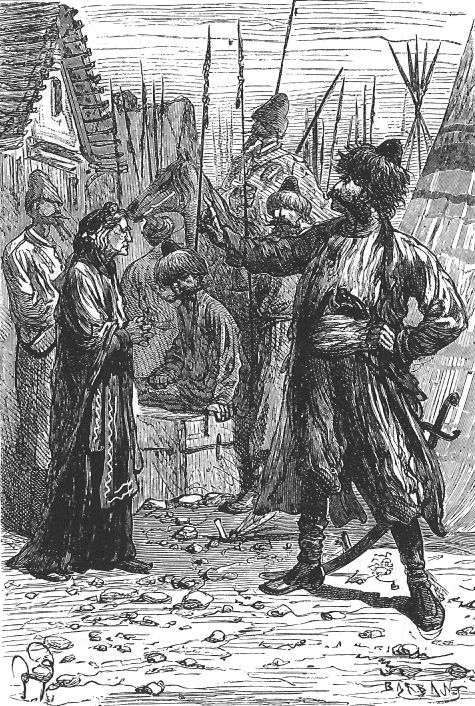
An illustration from the novel 'Michael Strogoff: The Courier of the Czar' by Jules Verne drawn by Jules Férat. Polski: Ilustracja powieści Juliusza Verne'a 'Michał Strogow, kurier carski' autorstwa Julesa Férata. Français : 'Michel Strogoff. Le courier du tzar', Jules Férat. Français : « Sais-tu que je puis te faire torturer ? »